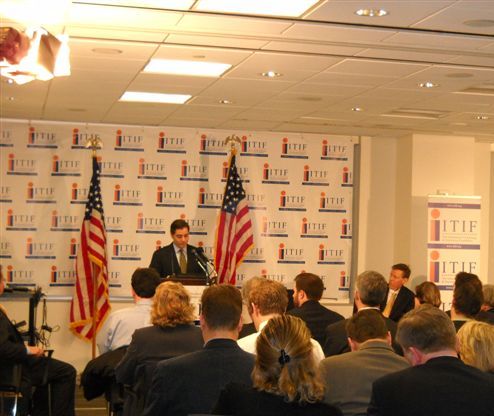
Universal Service Fund Reform at ITIF

Chairman Julius Genachowski made remarks on the urgent need for Universal Service Fund reform. February 7, 2011 at ITIF in Washington, D.C.